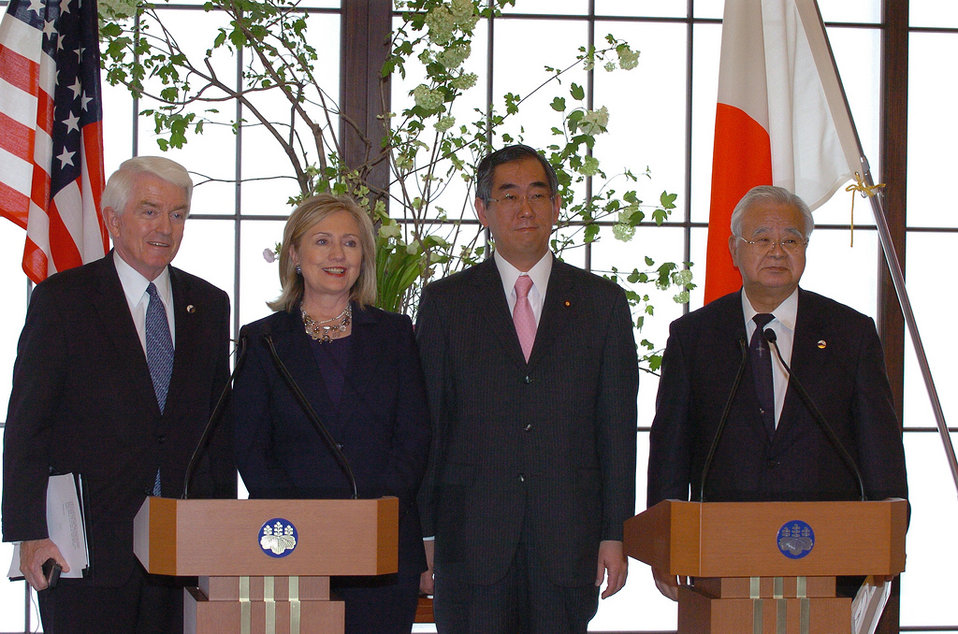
Chamber of Commerce President Donohue, Secretary Clinton, Japanese Foreign Minister Matsumoto, and Keidanren Chairman Yonekura Address the Press

U.S. Chamber of Commerce's President and CEO Tom Donohue, left; U.S. Secretary of State Hillary Rodham Clinton, second from left; Japanese Foreign Minister Takeaki Matsumoto, third from left; and Keidanren Chairman Hiromasa Yonekura address the press at the Iikura Guest House in Tokyo, Japan, on April 17, 2011.